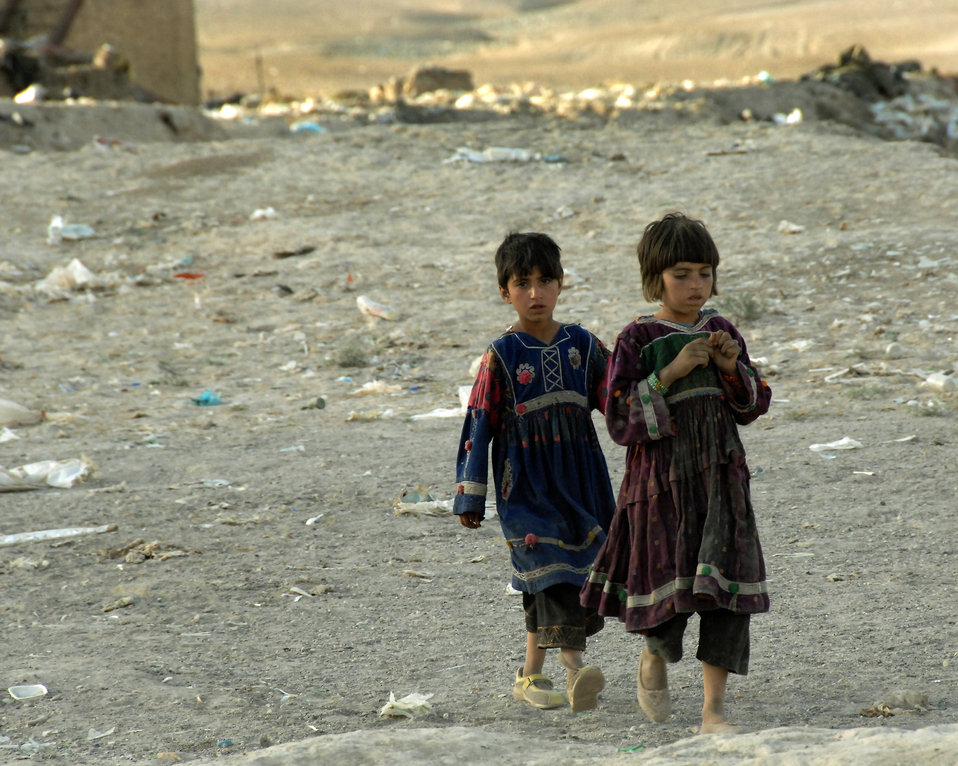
Afghanistan experiences won't be forgotten

Nomadic Kuchi girls walk through an abandoned Soviet-era artillery range where they lived in January 2007 in Kabul, Afghanistan. International Security Assistance Force troops patrol the village.